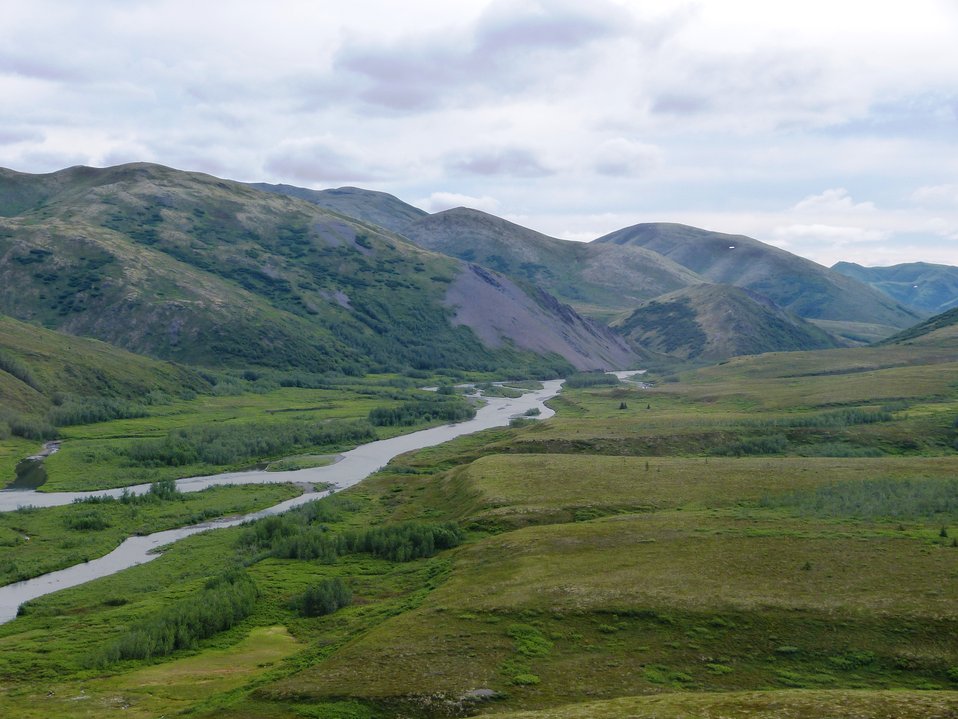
Kisaralik River, Kilbuck Mountains, Yukon Delta National Wildlife Refuge

Photo by: Kristine Sowl,
USFWS, Yukon Delta NWR, July 10, 2013